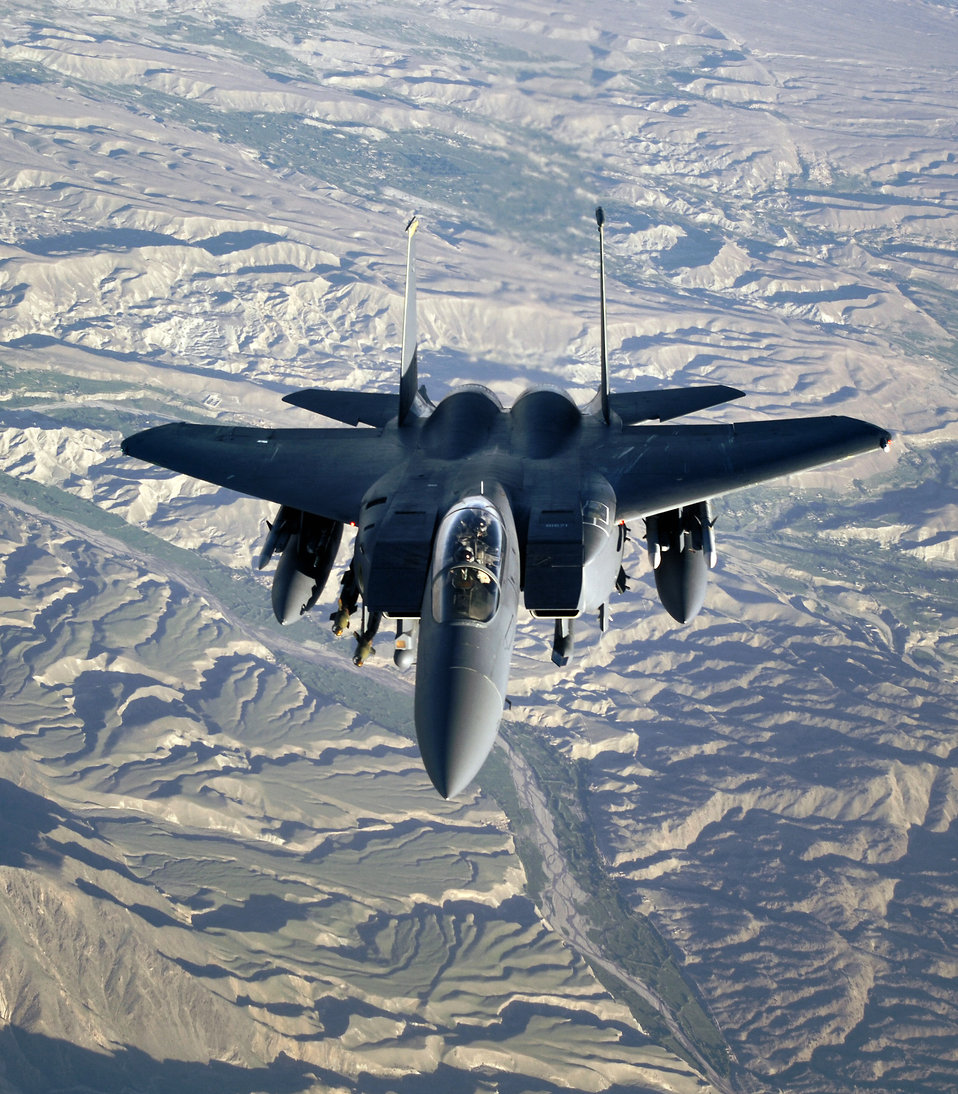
Jan. 28 airpower summary: F-15Es deter insurgent activities

An F-15E Strike Eagle soars over the mountains and high desert of Afghanistan providing close-air support to troops on the ground engaged in rooting out insurgent sanctuaries and support networks. The Strike Eagle is a dual-role fighter designed to perform air-to-air and air-to-ground missions.